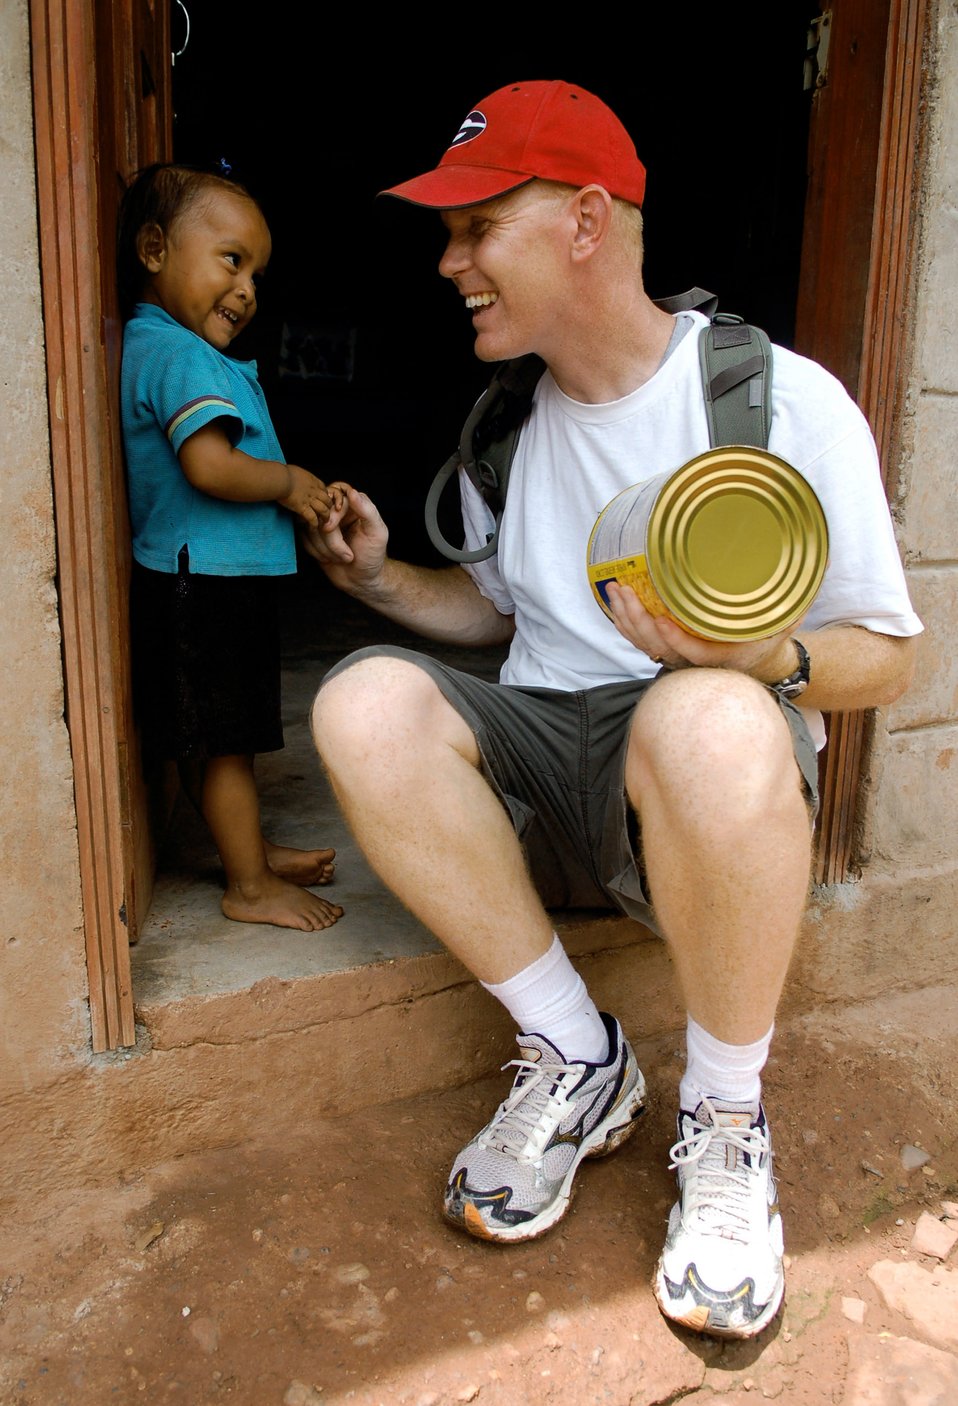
Servicemembers make mountain trek to deliver food

Chaplain (Capt.) Chad Bellamy plays with a young Honduran girl during a break on a nearly five-mile hike to deliver supplies to families living in the mountains near Comayagua, Honduras. The Joint Task Force-Bravo chaplain organized the trip, which delivered 450 pounds of food to the village of Mata De Platano.